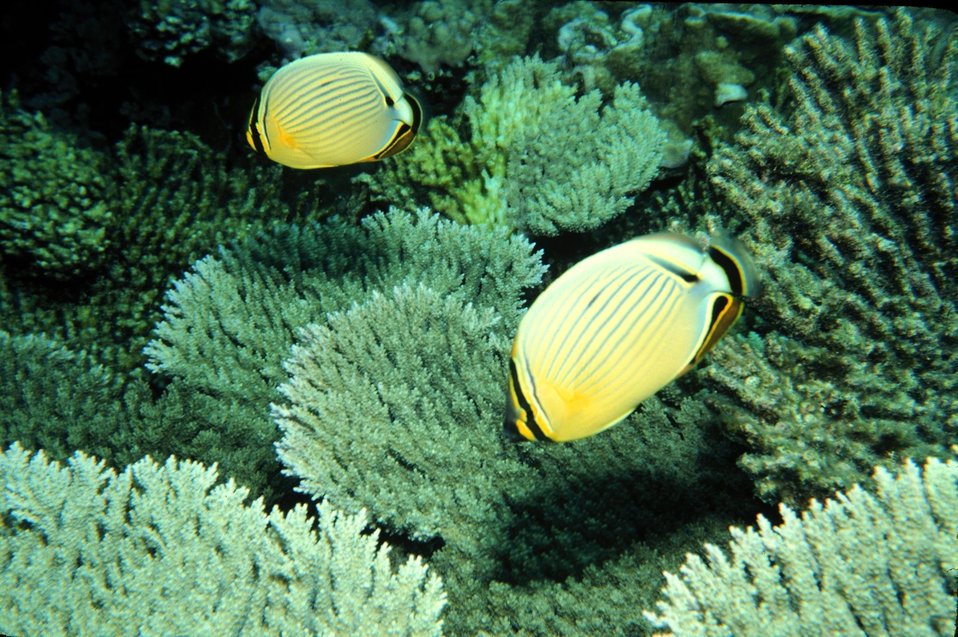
Butterflyfish at Johnston Atoll NWR

Butterfly fish feed in Acropora cytherea coral in the waters of Johnston Atoll National Wildlife Refuge in the Pacific.